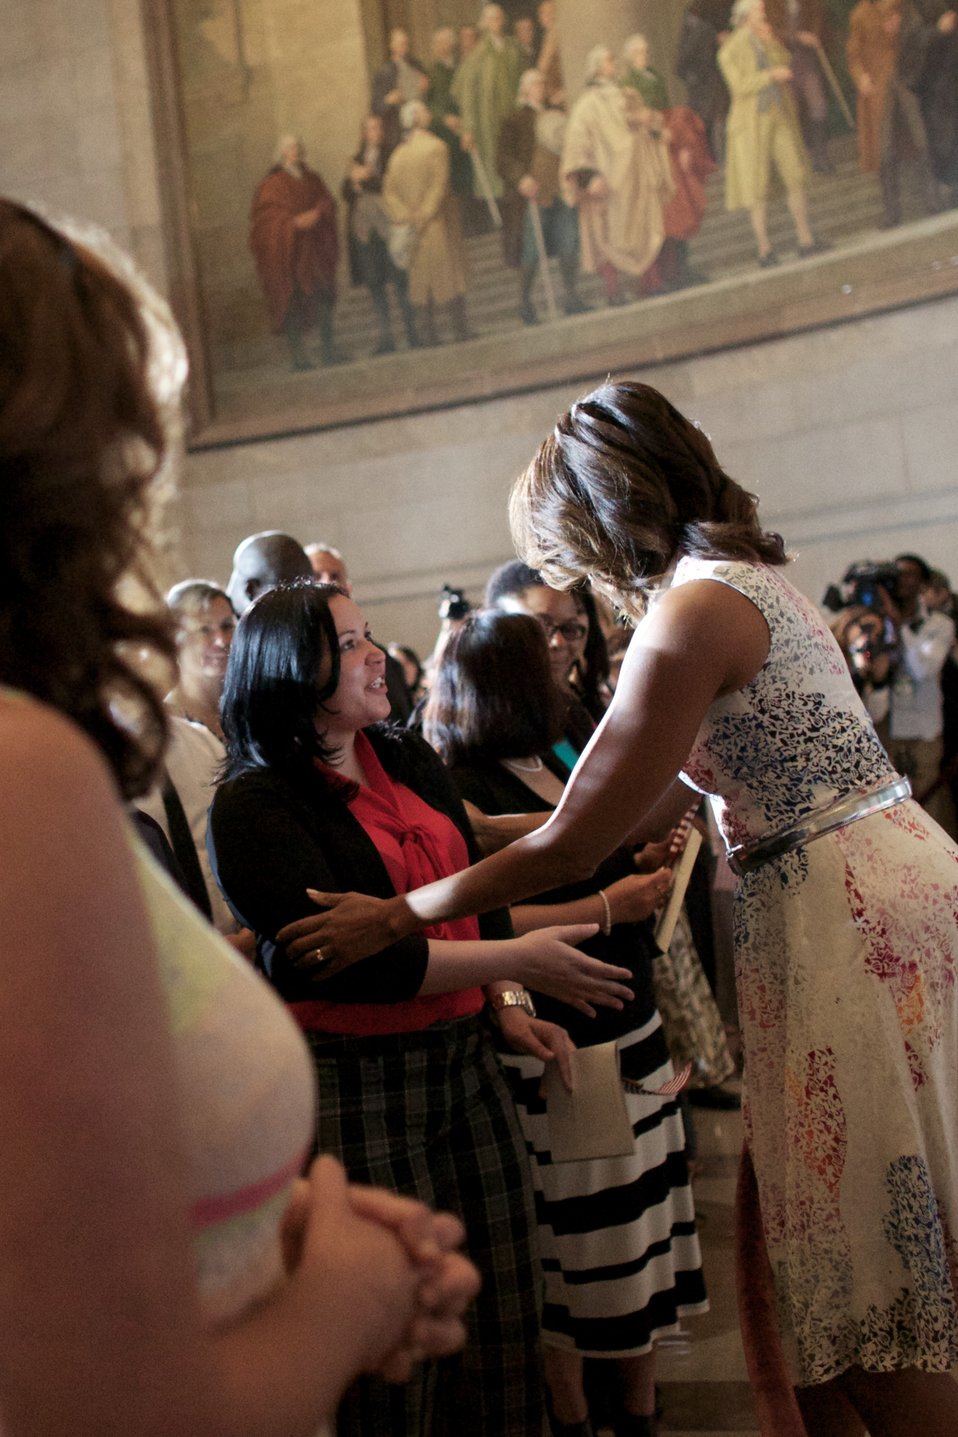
Naturalization Ceremony with Michelle Obama